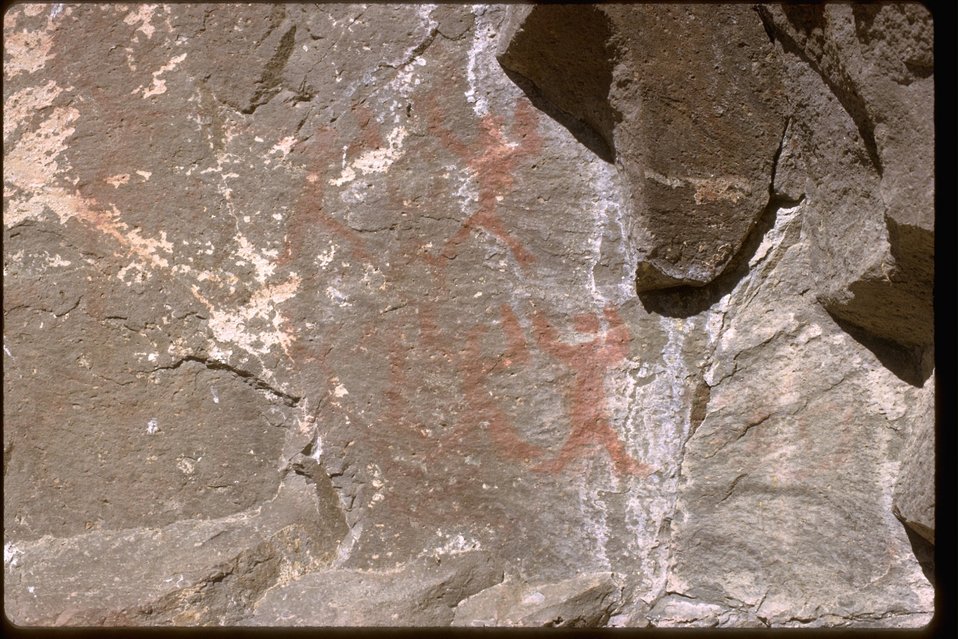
Pictograph or rock art found at Billy Cross.